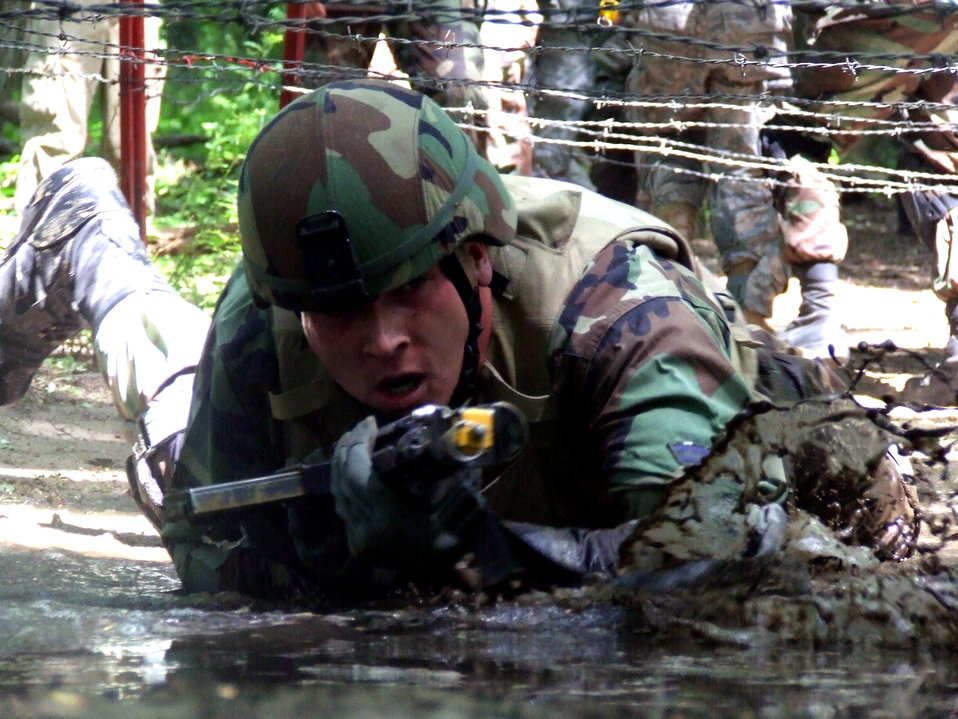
Warriors play

A student in the Phoenix Warrior Training Course participates in a combat first aid class June 19 at Fort Dix, N.J. The course is taught by the Air Force Expeditionary Center's Expeditionary Operations School and 421st Combat Training Squadron and prepares security forces Airmen for upcoming deployments.